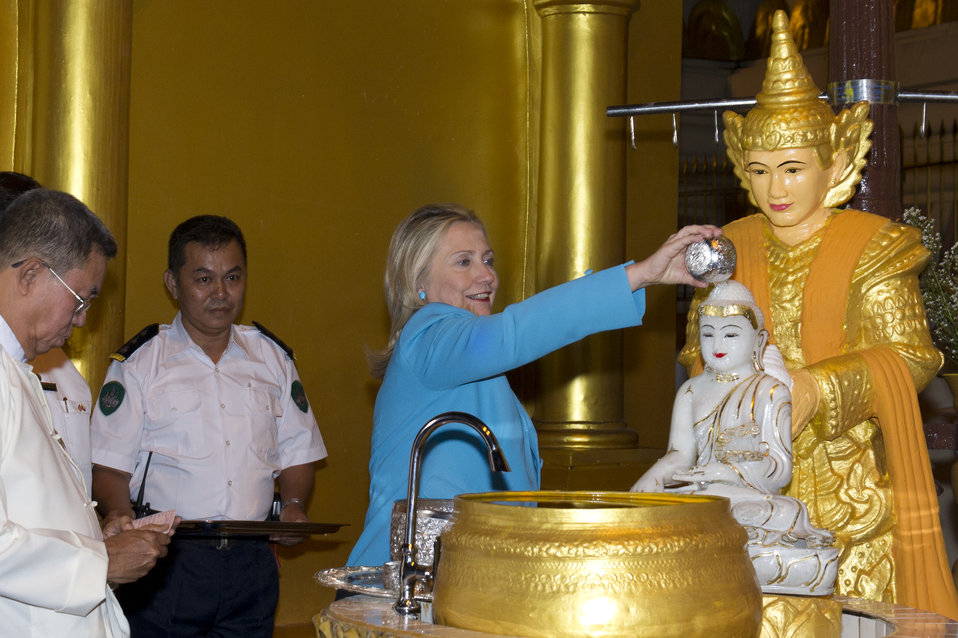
Secretary Clinton Visits the Shwedagon Pagoda

U.S. Secretary of State Hillary Rodham Clinton visits the Shwedagon Pagoda in Rangoon, Burma, on December 1, 2011.